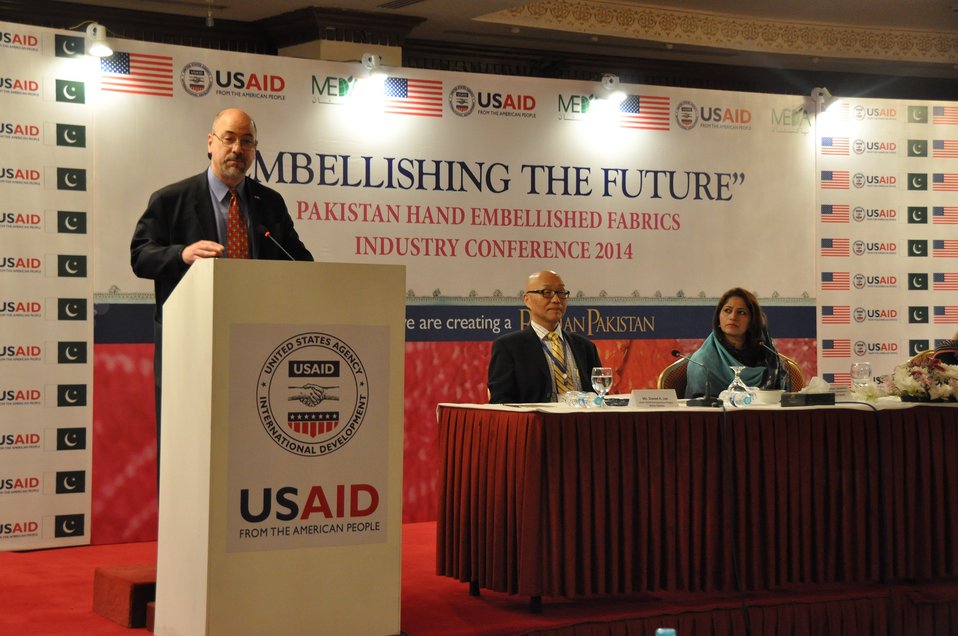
HEF Conference Karachi, March 26, 2014